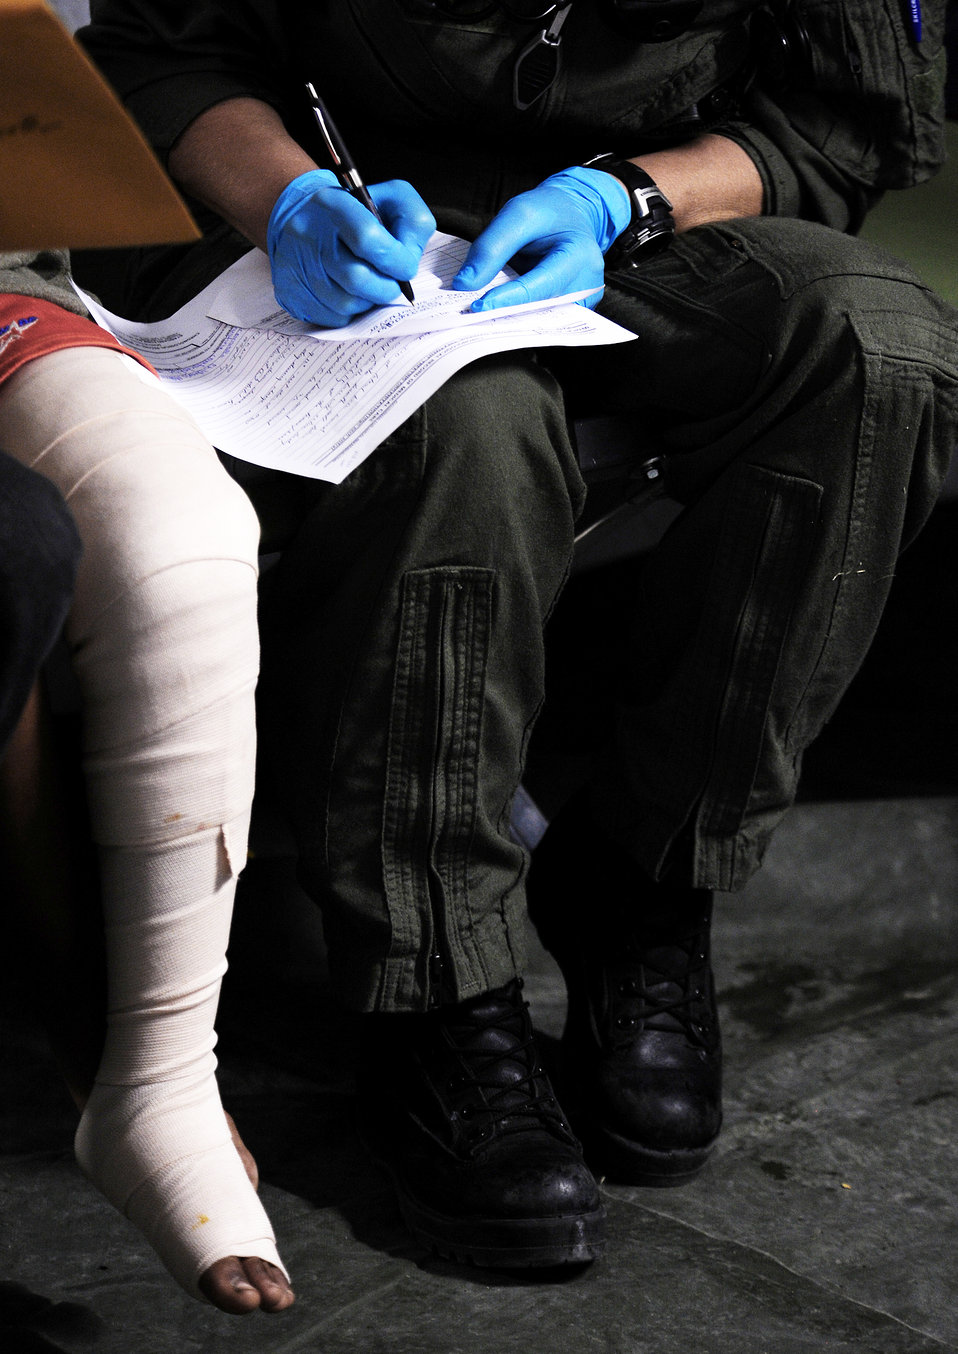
Hurlburt Field medics continue to save lives in Haiti

A 6-year-old Haitian boy is treated by Tech. Sgt. Patricia Wilson at Toussaint L'Ouverture International Airport in Port-au-Prince, Haiti, Jan. 19, 2010, prior to being airlifted to a stateside hospital in southern Florida. Department of Defense assets have been deployed to assist in the Haiti relief effort following a magnitude-7 earthquake that hit Port-au-Prince Jan. 12. Sergeant Wilson is assigned to the 1st Special Operations Support Squadron from Hurlburt Field, Fla.